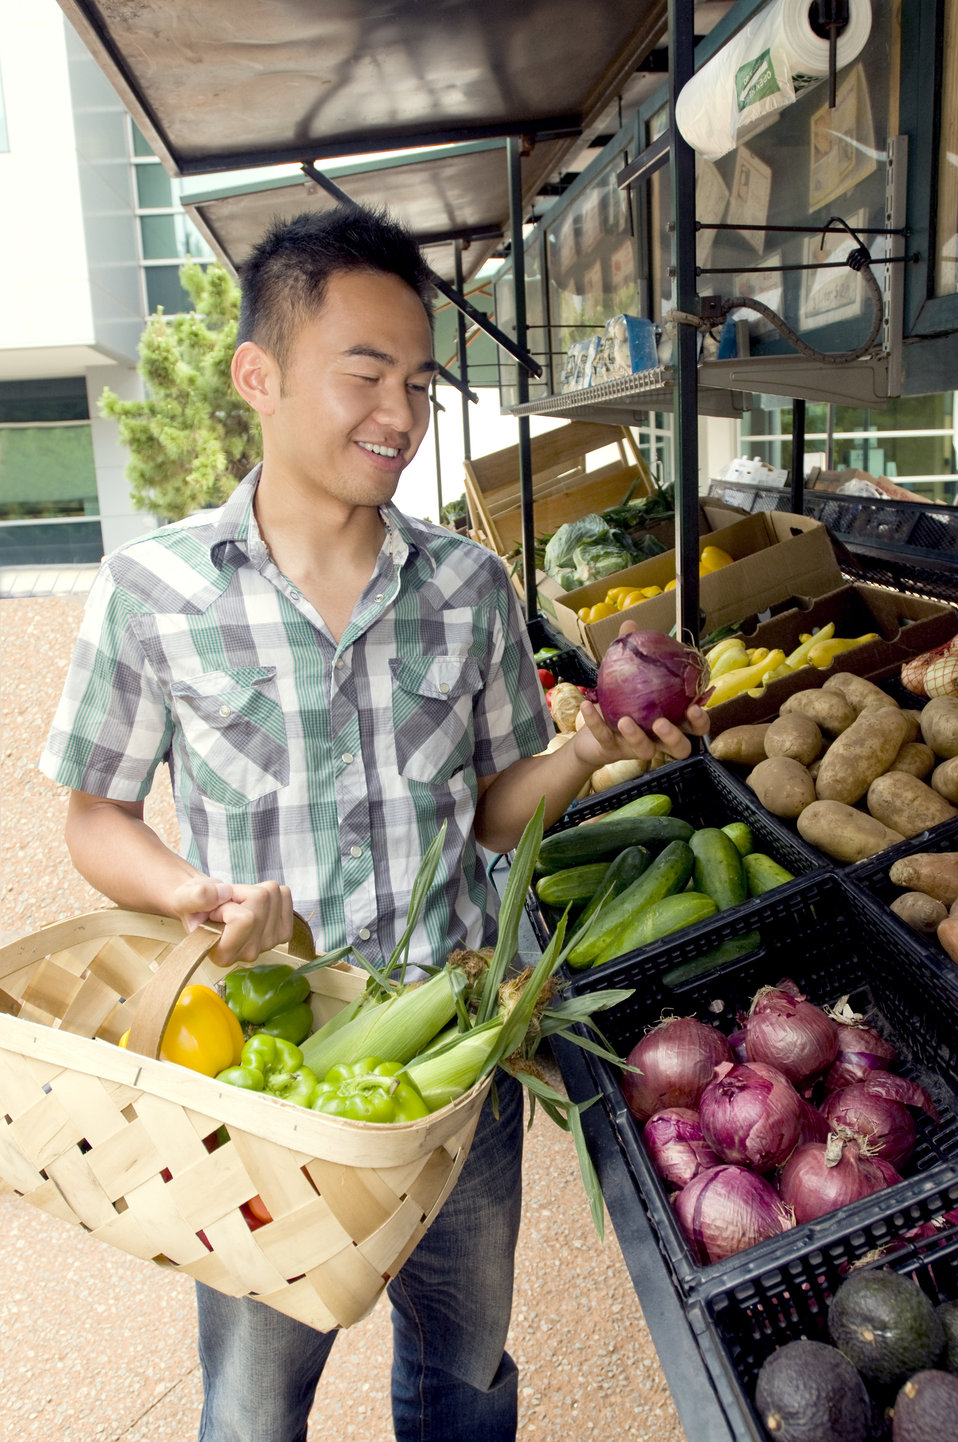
This man was photographed as he was shopping for groceries at a mobile Georgian farmers market at a point in his activity where he was picking out a purple onion in the market's produce section. Here he appears to have made his choice, holding the onion in his left hand before adding it to a woven wooden basket filled with other produce products he'd chosen during his shopping activity.